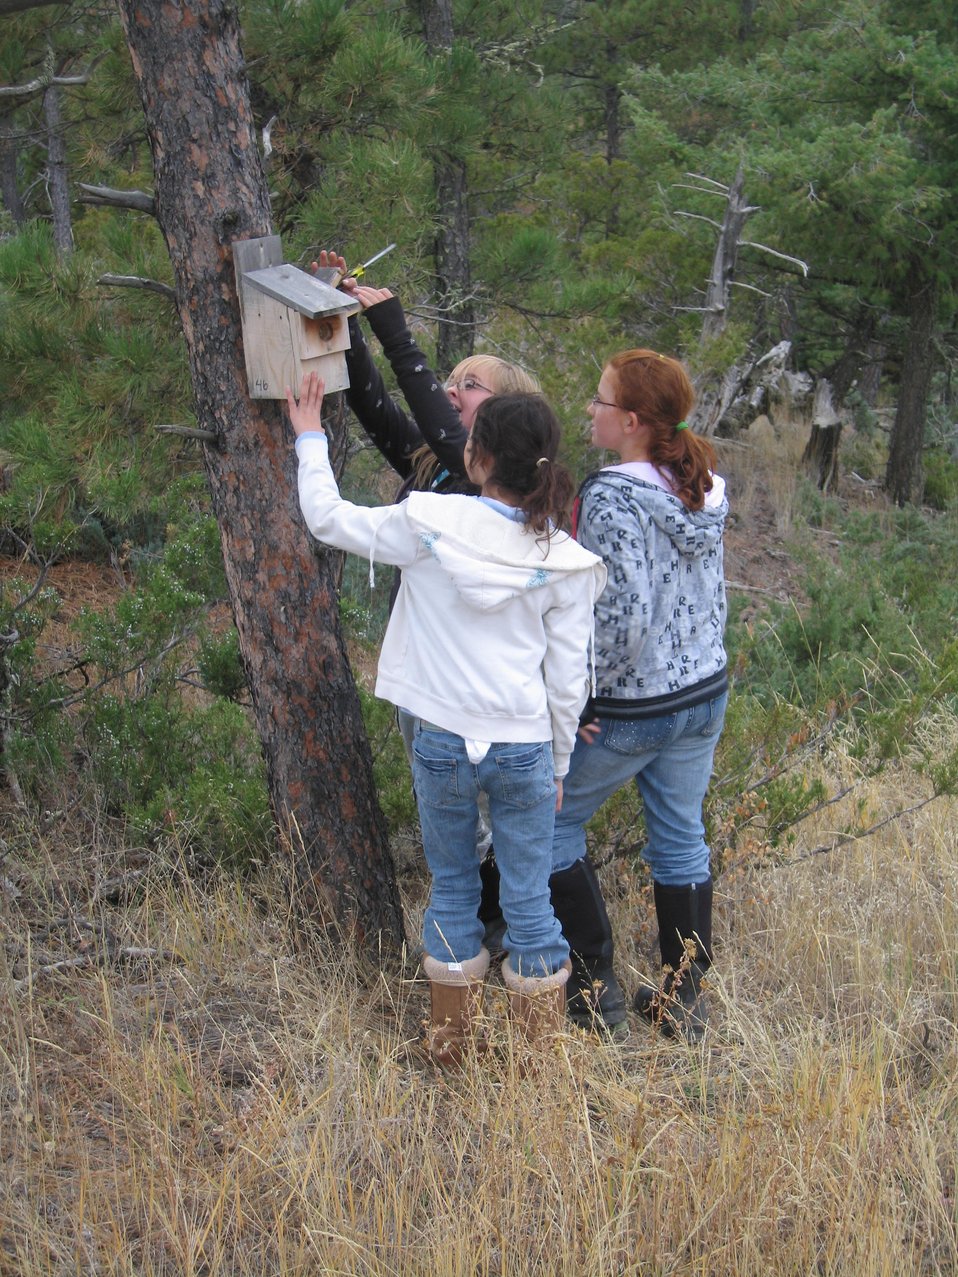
Charles M. Russell National Wildlife Refuge

Girl Scouts come to Charles M. Russel NWR to learn more about wildlife. Their work on bluebird boxes at the Refuge earned them a wildlife badge.